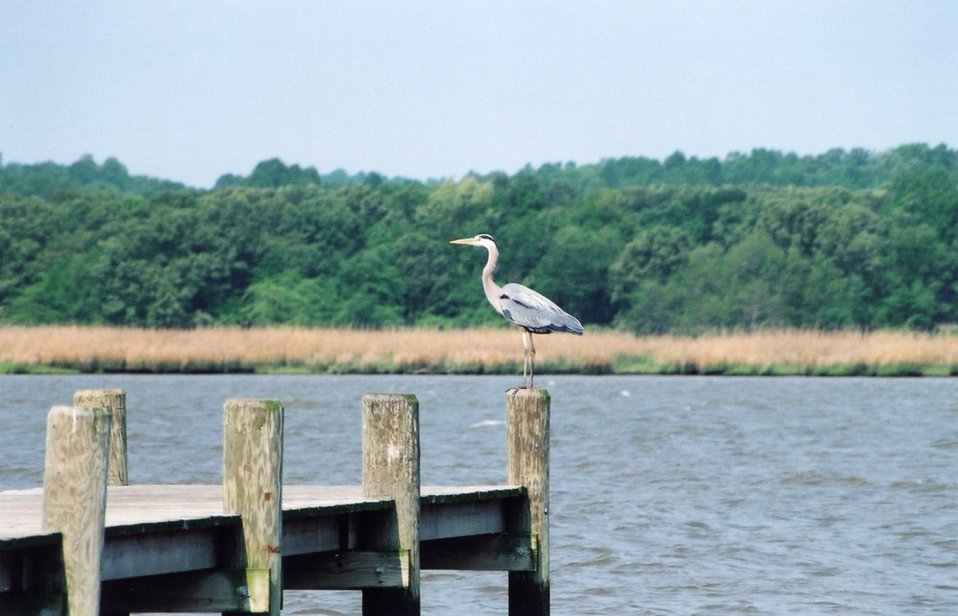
Great blue heron perched on a pier piling.